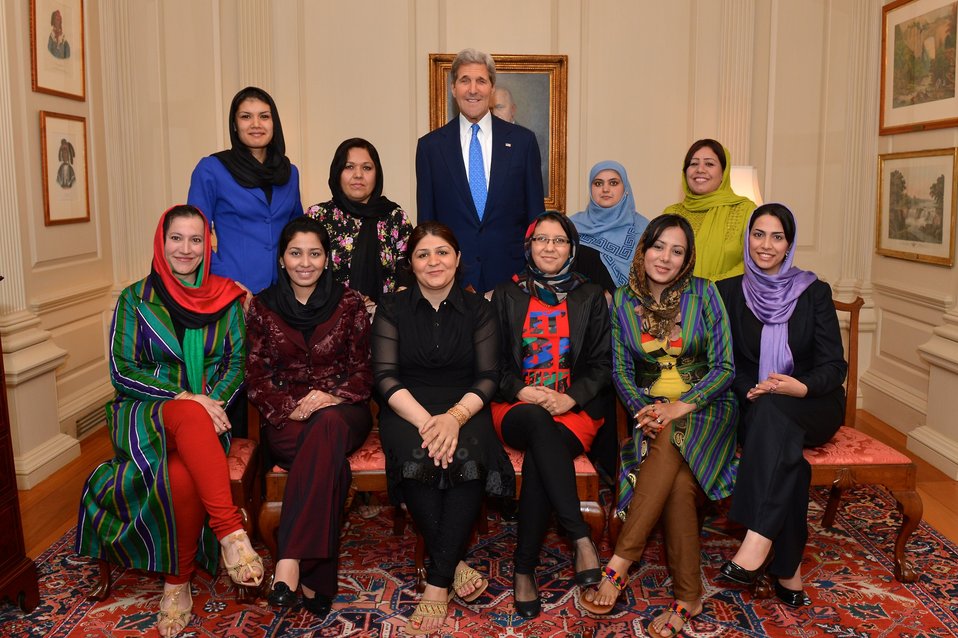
Secretary Kerry Poses for a Photo With Female Afghan Journalists

U.S. Secretary of State John Kerry meets with women Afghan journalists who are visiting Washington, D.C., on an International Visitors Leadership Program titled, 'Women Journalist and Media Advocacy,' at the U.S. Department of State on May 13, 2014.